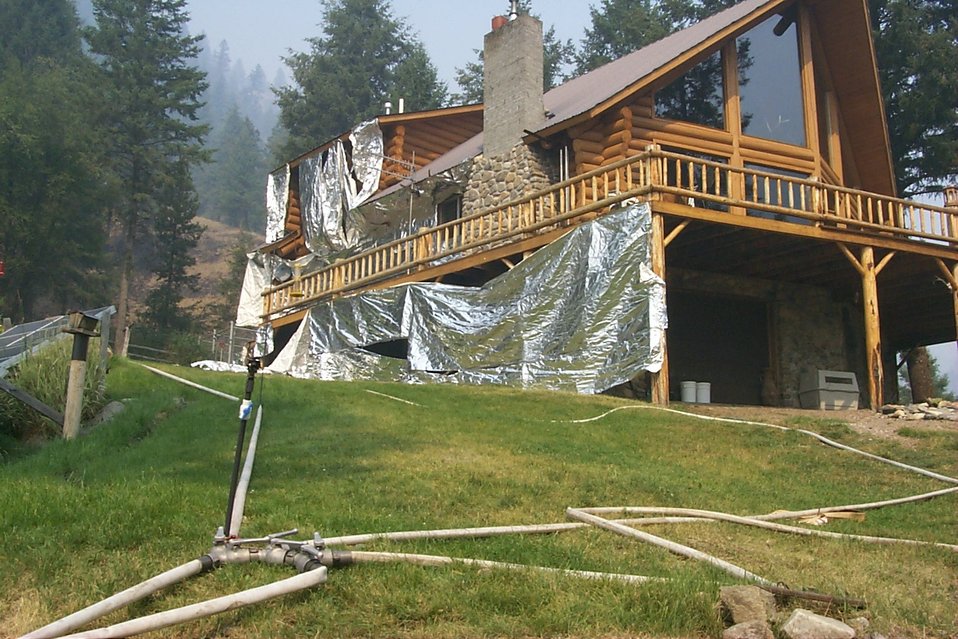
Fire retardant measures Fire Clearwater Fire Salmon Field Office USRD Upper Snake River District